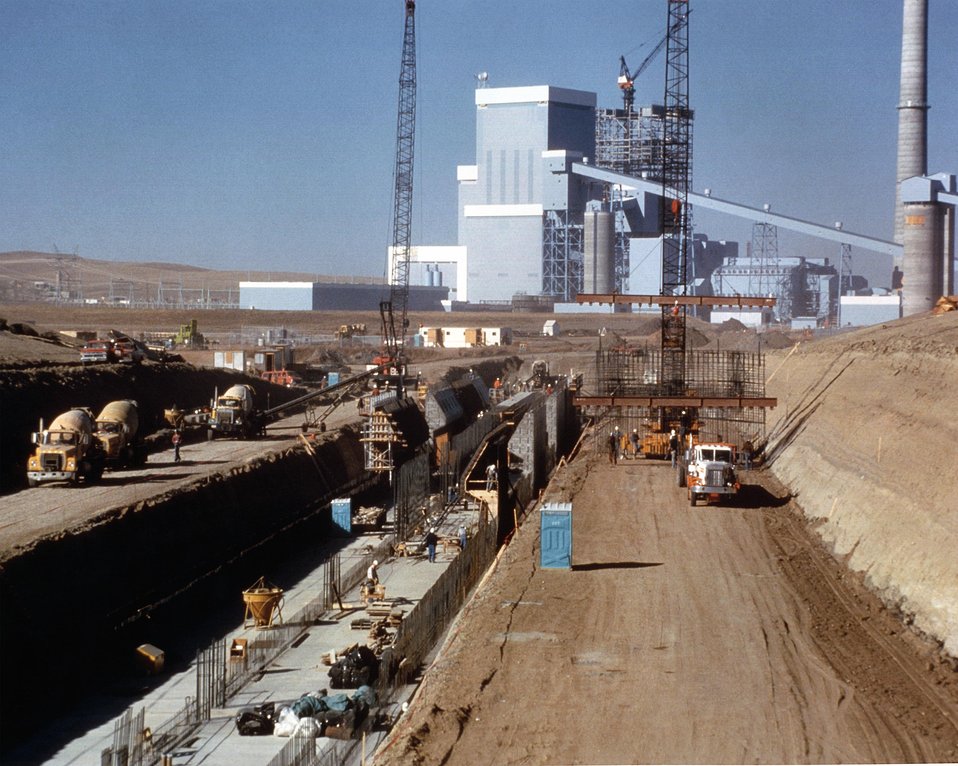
CONSTRUCTION IS STARTED ON THE GREAT PLAINS COAL GASIFICA- TION PLANT.

INTERSTATE NETWORK OF GAS PIPELINES. APPROXIMATELY 14,000 TONS OF LIGNITE WILL BE FED EACH DAY INTO 12 LURGI GASIFIERS (2 ADDITIONAL GASIFIERS WILL BE KEPT ON STANDBY). GAS EXITING THE GASIFIERS WILL BE COOLED, CLEANED OF SULFUR, AMMONIA, AND OTHER IMPURITIES, THEN UPGRADED TO A PIPELINE QUALITY SYNTHETIC NATURAL GAS. THE LURGI PROCESS WILL USE THE LARGER-SIZED COAL FROM THE PLANT'S COAL CRUSHING OPERATION WHILE SOME 8,000 TONS PER DAY OF THE SMALLER SIZE COAL WILL BE SOLD TO AN ADJACENT STEAM ELECTRIC GENERATING PLANT. THE GREAT PLAINS PLANT WILL ALSO PRODUCE 93 TONS PER DAY OF AMMONIA AND 85 TONS PER DAY OF SULPHUR.